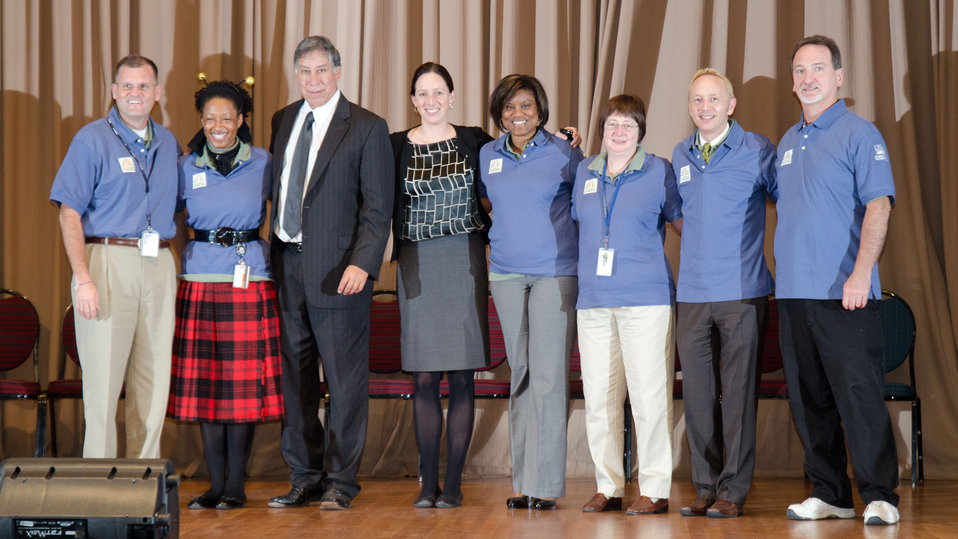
Graduation day of the 2011 U.S. Department of Agriculture (USDA) Executive Master Gardeners, on Tuesday, November 8, 2011 in Washington, DC. During the past six-weeks, students contributed 40-hours of volunteer time, completed studies and testing to receive their certificates today as an Executive Master Gardener. Many of the sessions occurred before work hours, during lunchtime or at community garden project sites such as Powell Middle School. USDA challenges its employees to establish People's Gardens at USDA facilities worldwide or in community gardens. People's Gardens vary in size and type, but all have a common purpose - to help the community and the environment. To learn about the People’s Garden Initiative visit www.usda.gov/wps/portal/usda/usdahome?contentid=peoples g....